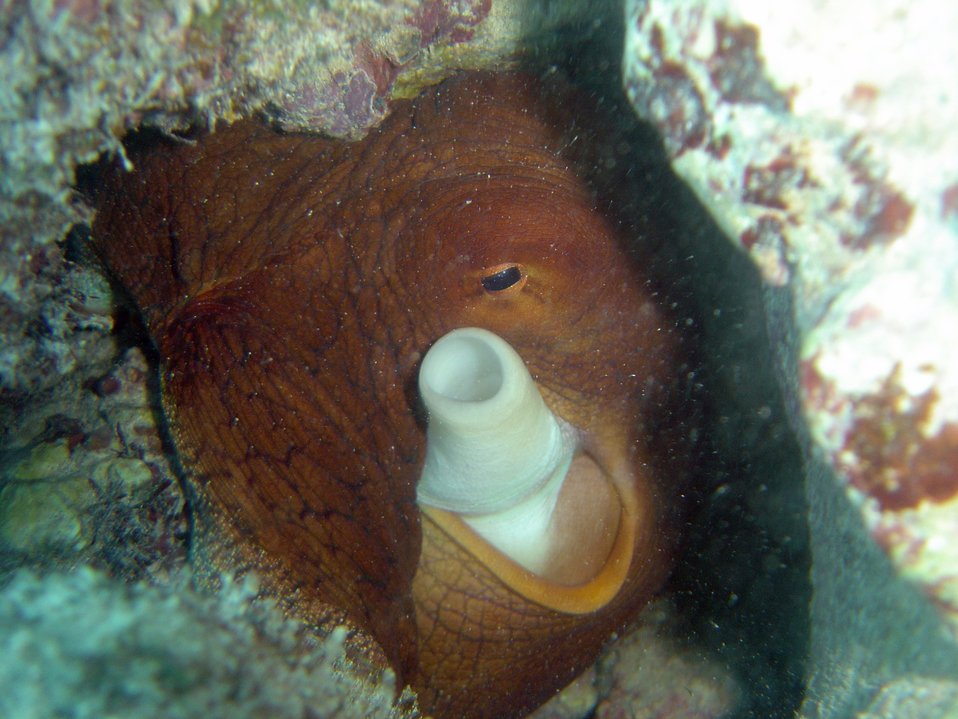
A large red octopus.